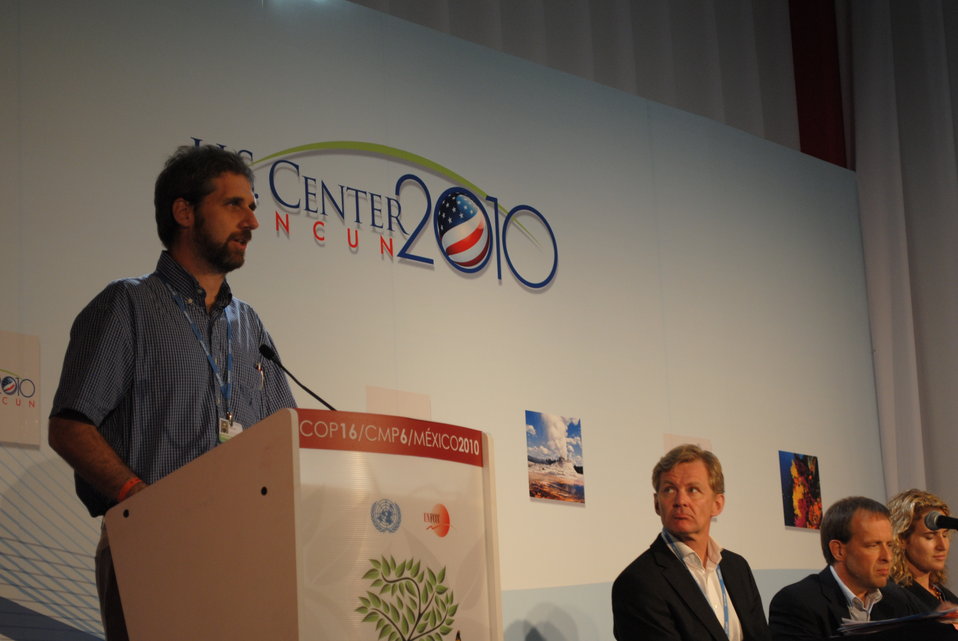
Panelists present during a side event at the U.S. Center at COP-16 in Cancun, Mexico, on December 3, 2010.